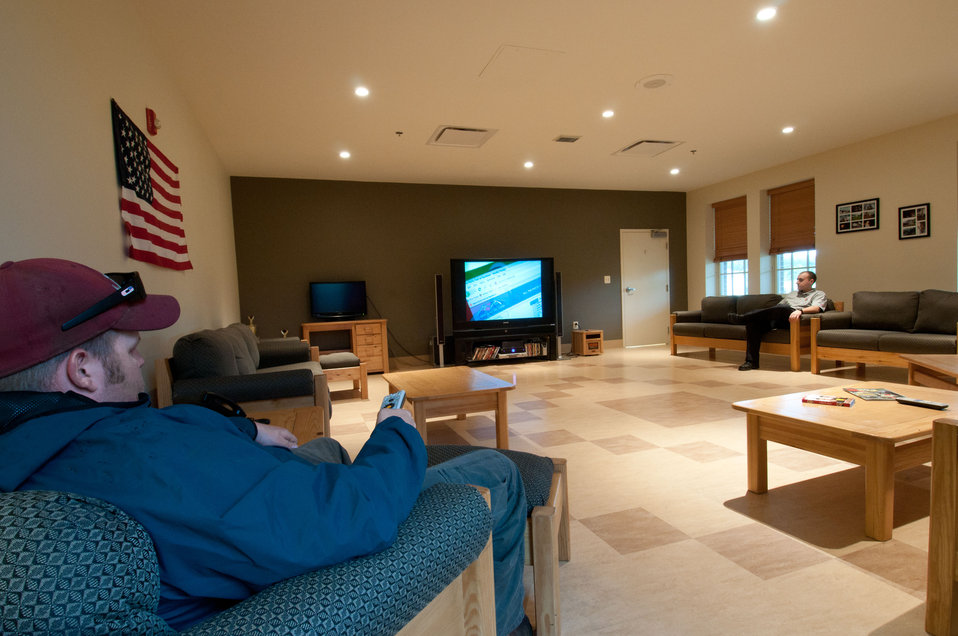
Lt. Mike Eskridge (left) and Technician Jonathan Bankston relax in the recreation room at the Catlett Volunteer Fire - Rescue, Station 7, Catlett, VA on Wednesday, May 4, 2011.